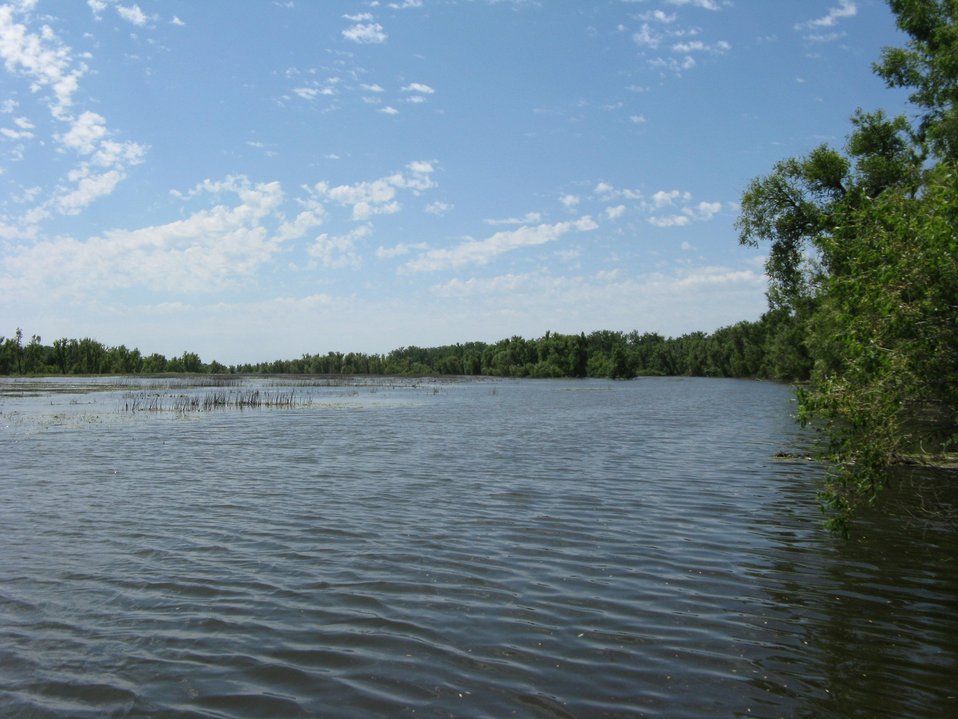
Maurer-Taylor Tract Ground Photo

The Maurer/Taylor tract, located at the confluence of the Yellowstone and Missouri rivers in northwestern N.Dakota, is a 495 acre parcel featuring a mature cottonwood gallery forest, 106 acres of connected backwater wetlands, and one mile of Missouri River.